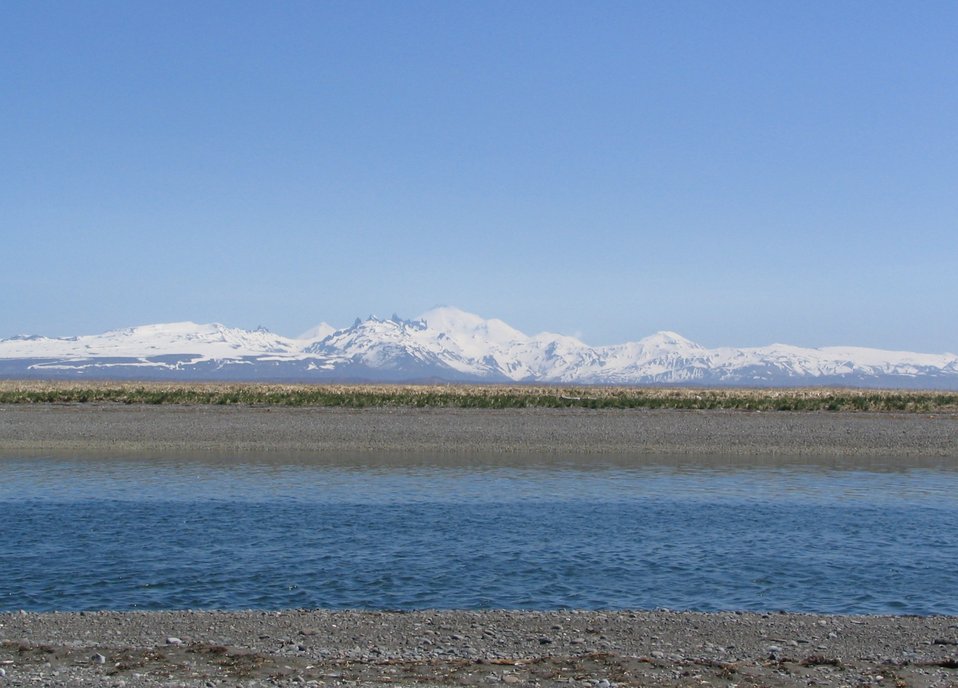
view from Kinzarof Lagoon

Kinzarof Lagoon, Izembek National Wildlife Refuge